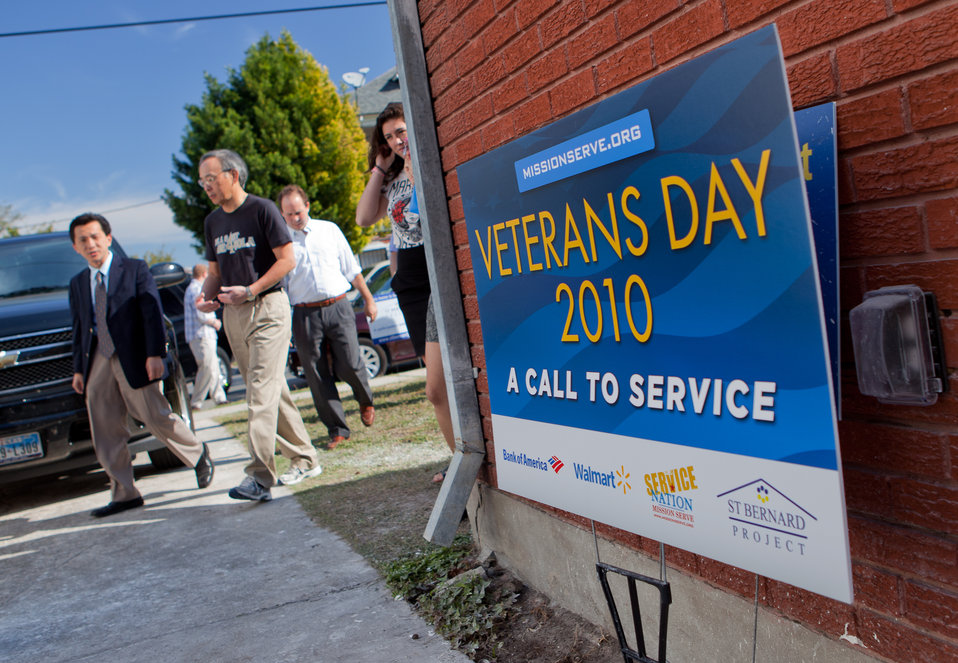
Veteran's Day in New Orleans 2 of 10

Sec. Steven Chu arrives at a home in New Orleans to join veterans in reconstruction work.